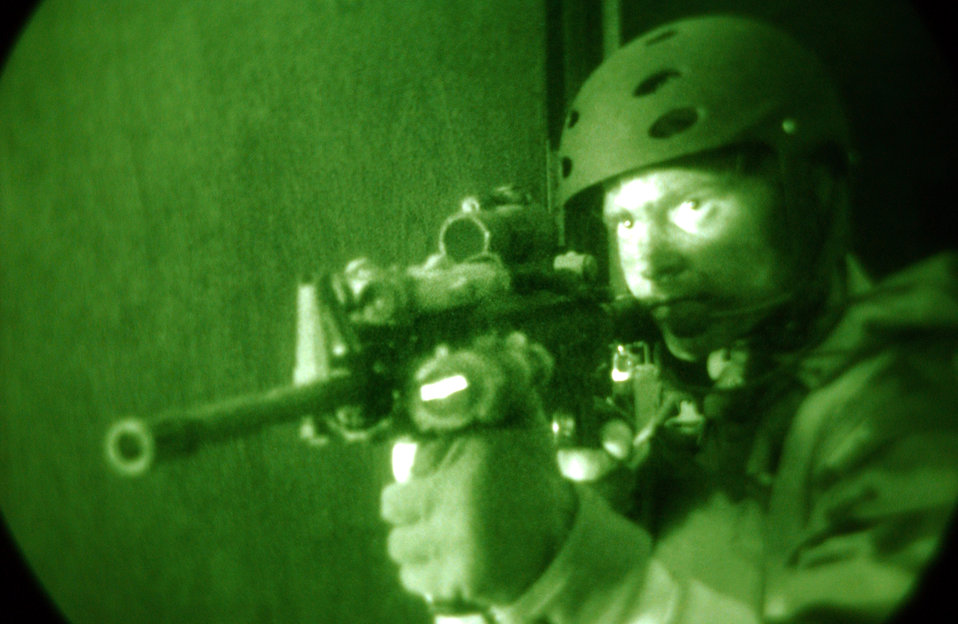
All clear

KADENA AIR BASE, Japan -- Staff Sgt. William Moore clears a room during a simulated urban warfare scenario as part of a training extraction here Aug. 5. Sergeant Moore is a pararescueman with the 31st Rescue Squadron.